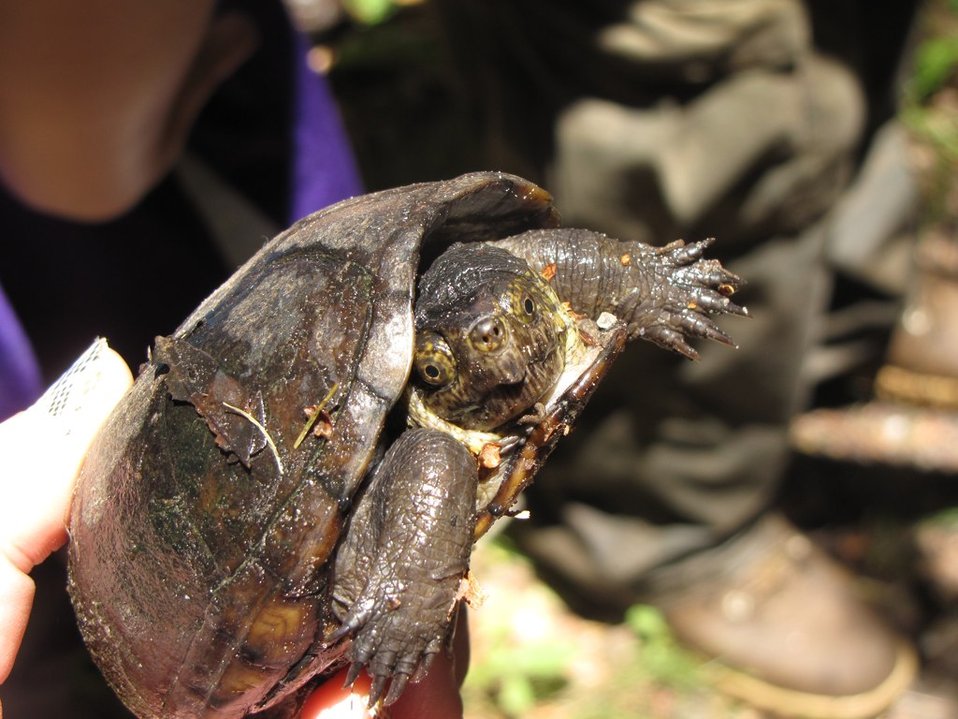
Mattaponi Wildlife Management Area, Virginia

Survey (June 27 - 28, 2012)

Eastern mud turtle (Kinosternon subrubrum subrubrum)